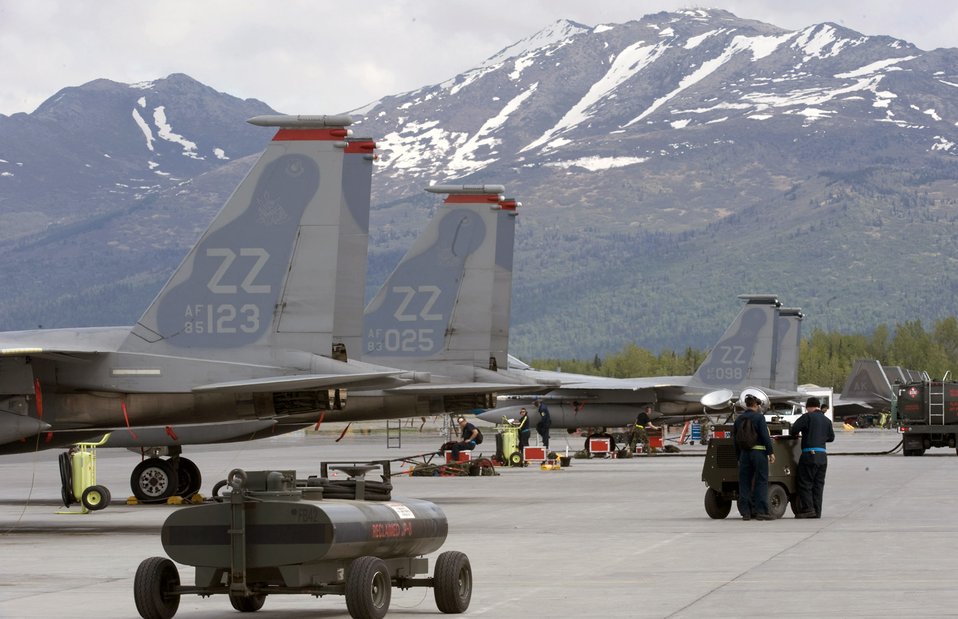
Wing units take on Red Flag

F-15's from Kadena Air Base, Japan, bed down on Elmendorf Air Force Base, Alaska, June 4. The 18th Wing is participating in Red Flag, a combat arial exercise which U.S. military and allies are training for for real-world senarios.